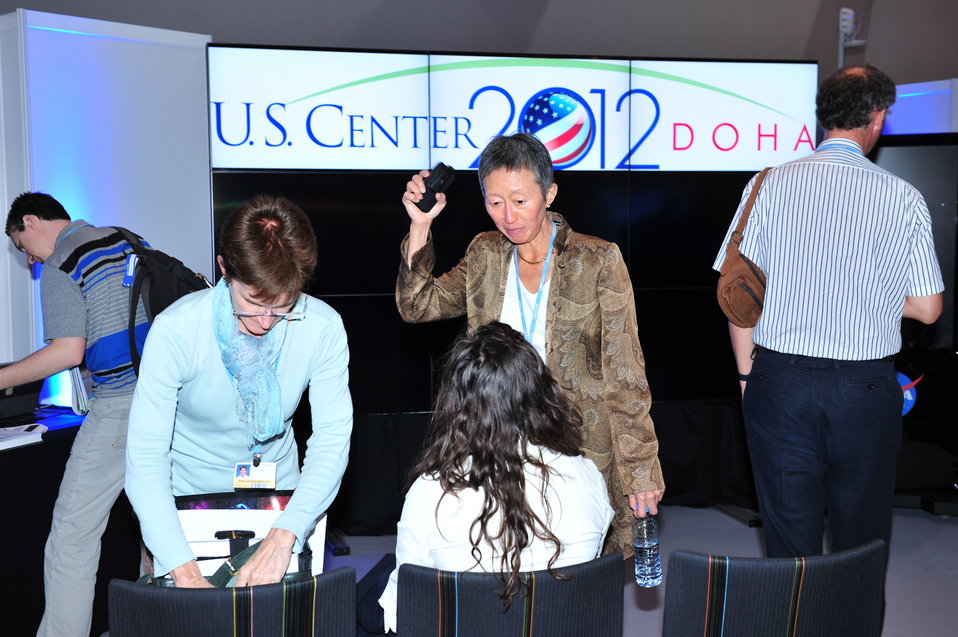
NASA's Dr. Ming-Ying Wei Speaks With Visitors

NASA's Program Manager Dr. Ming-Ying Wei speaks with visitors at the U.S. Center at the 18th Session of the Conference of the Parties to the UN Framework Convention on Climate Change (COP-18) in Doha, Qatar, November 30, 2012.